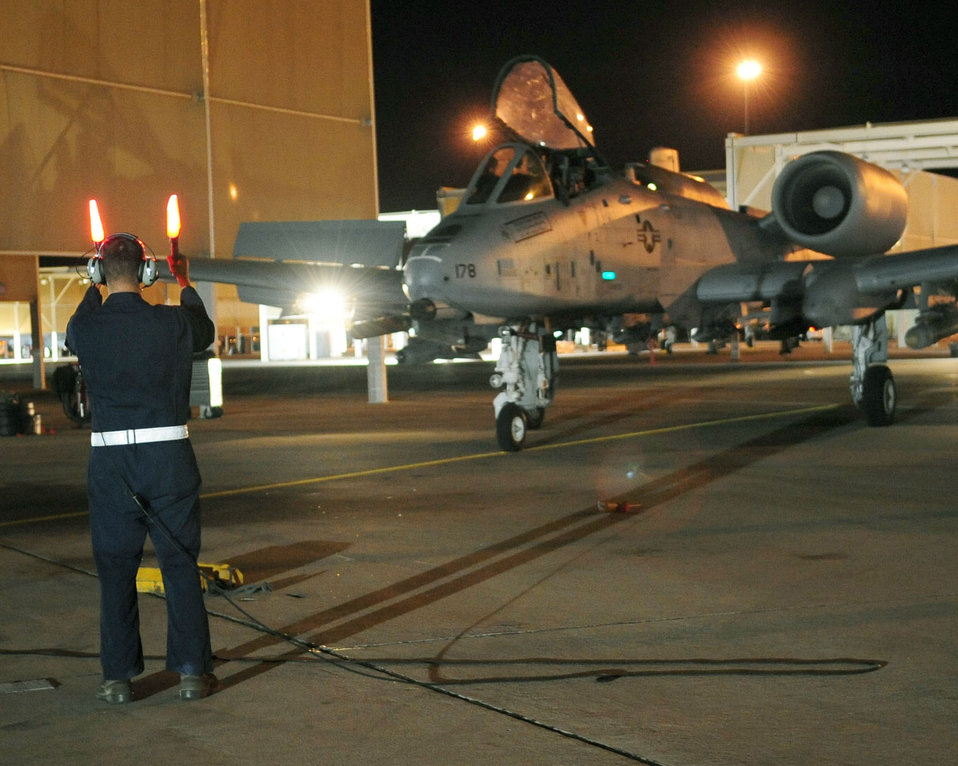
A-10 qualification

Airman 1st Class Jeff Gronemyer, an A-10C Thunderbolt II crew chief from the 355th Aircraft Maintenance Squadron at Davis-Monthan Air Force Base, Ariz., directs 1st Lt. Dan Griffin to his parking spot June 23, 2010, following his second night flight. Lieutenant Griffin is a student in the A-10C Pilot Initial Qualification course. . Upon completion of the course in August he will become a fully qualified A-10C attack pilot.